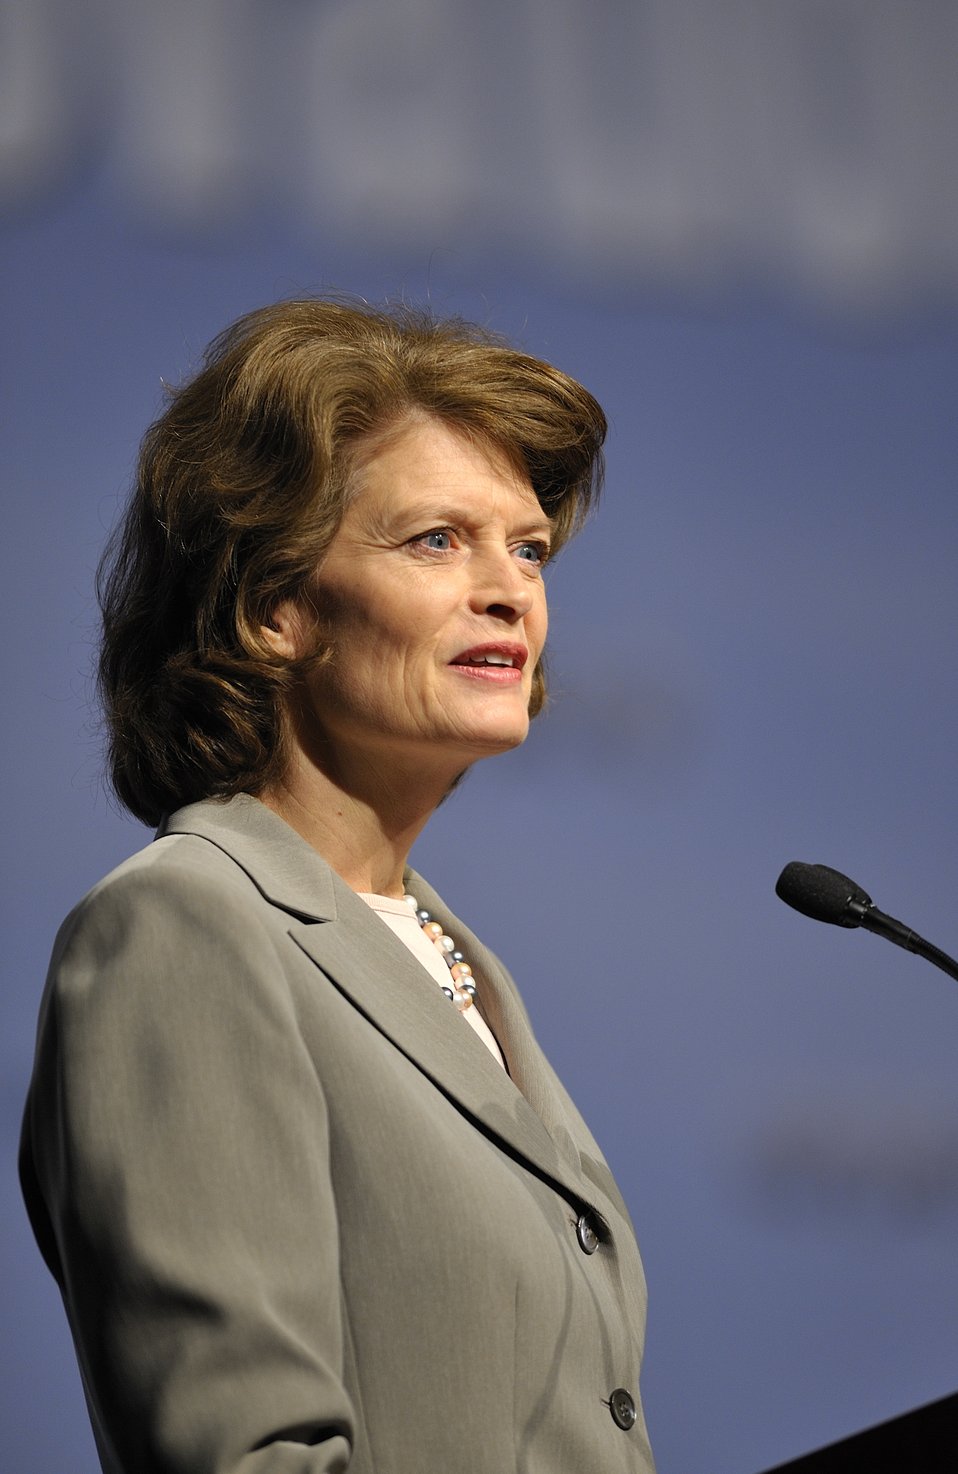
ARPA-E Energy Innovation Summit 2011, 36 of 83

Senator Lisa Murkowski (I-AK)